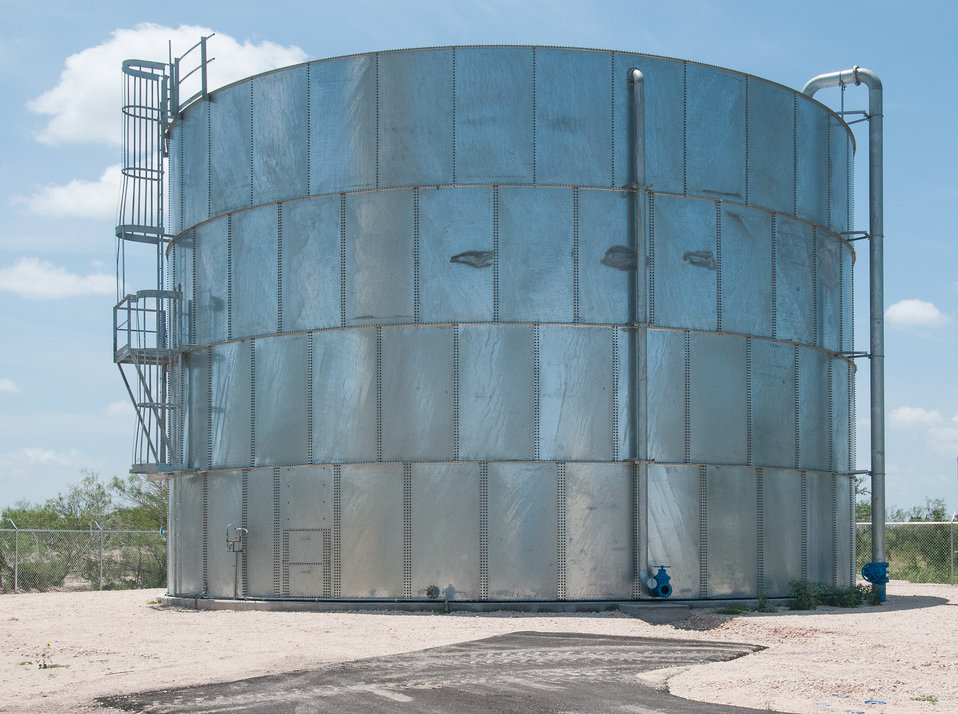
Processed water is held in this ground storage tank and buffers the water level of the primary existing water storage tank (not seen) at the Freer Water Control and Improvement District (FWCID) Arsenic Removal System Site, on Tuesday, June 18, 2013, in Freer, Texas.

FWCID benefits from the financial assistance of the U.S. Department of Agriculture (USDA) Rural Development (RD) to complete a two-phase approach to meeting the city’s water supply and safety needs, on Tuesday, June 18, 2013. Although, the naturally occurring arsenic levels have remained constant for more than a century, the Environmental Protection Agency (EPA) safe level standards have established lower levels of arsenic to be safe for human consumption. To meet those levels FWCID approached USDA and was awarded a $986,000 loan for Phase I, to install two new water wells, each rated at 167 gallons per minute (creating a total of eight wells); 13,600 feet of well collection lines; and 15,000 linear feet of well control line to remotely control the well pumps and the 1,000,000 gallon holding tank at the well facility, which supplies water to the new Arsenic Removal System (Phase II). Previously, water was manually controlled by personnel who knew when and how long to manually opened and closed water valves or started well pumps to ensure holding tank levels were within operating levels during peek and slack times of the day. Phase II was a combination of a $1,832,000 loan and a $1,258,750 grant, which provided for the customized arsenic removal system, seen in these photos. The system includes a new 3,530 sp. ft. facility, on a .76-acre site, and houses the operations room, computer and power system, laboratory room, and pump systems. The entire operation can be monitored through a desktop computer interface system. The computer-controlled system ensures raw water is fed to the arsenic removal pump system, which works in sequence to maintain a constant pressure, when needed, to pump water through (blue) arsenic removal absorber vessels, and into ground storage tanks that feeds the residential and commercial needs of the city. Samples of water are periodically tested; and so far the arsenic levels have been below 1 part per billion (PPB), well under the 10 PPB limit.